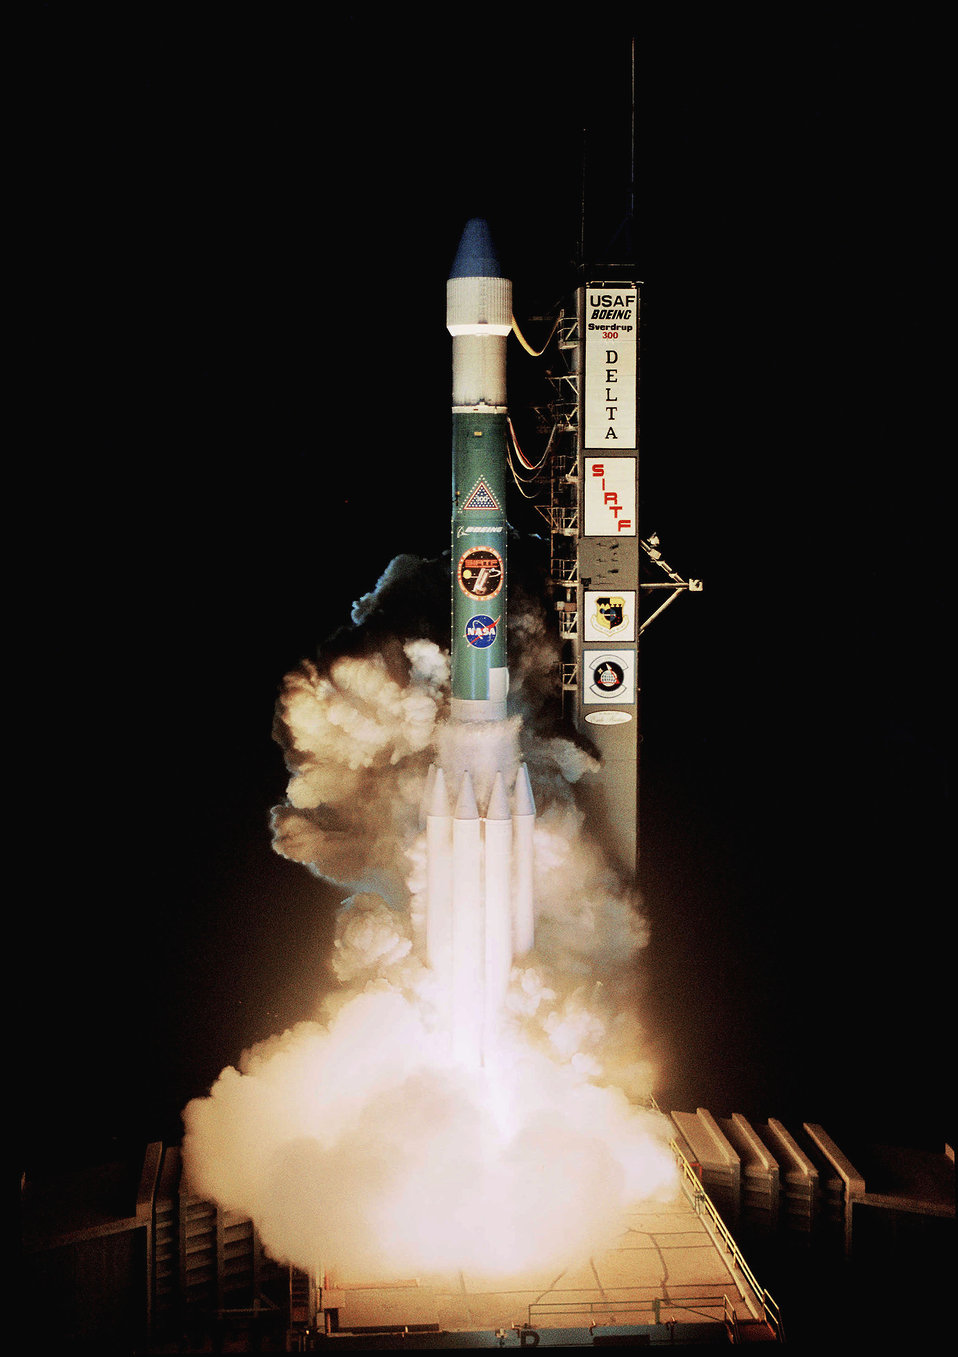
Delta II launch

CAPE CANAVERAL AIR FORCE STATION, Fla. -- NASA's Space Infrared Telescope Facility launched from here Aug. 25 at 1:35 a.m. EDT aboard a Delta II launch vehicle. The facility will use infrared detectors to pierce the dusty darkness enshrouding many of the universe's distant objects.